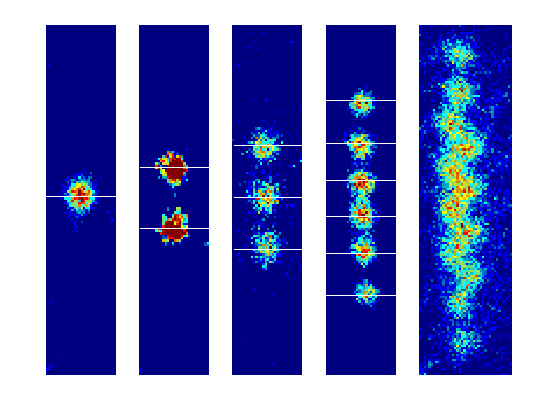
Planar Ion Trap; Magnesium Ions

False-color images of 1, 2, 3, 6, and 12 magnesium ions loaded into NIST's new planar ion trap. Red indicates areas of highest fluorescence, or the centers of the ions. As more ions are loaded in the trap, they squeeze closer together, until the 12-ion string falls into a zig-zag formation.